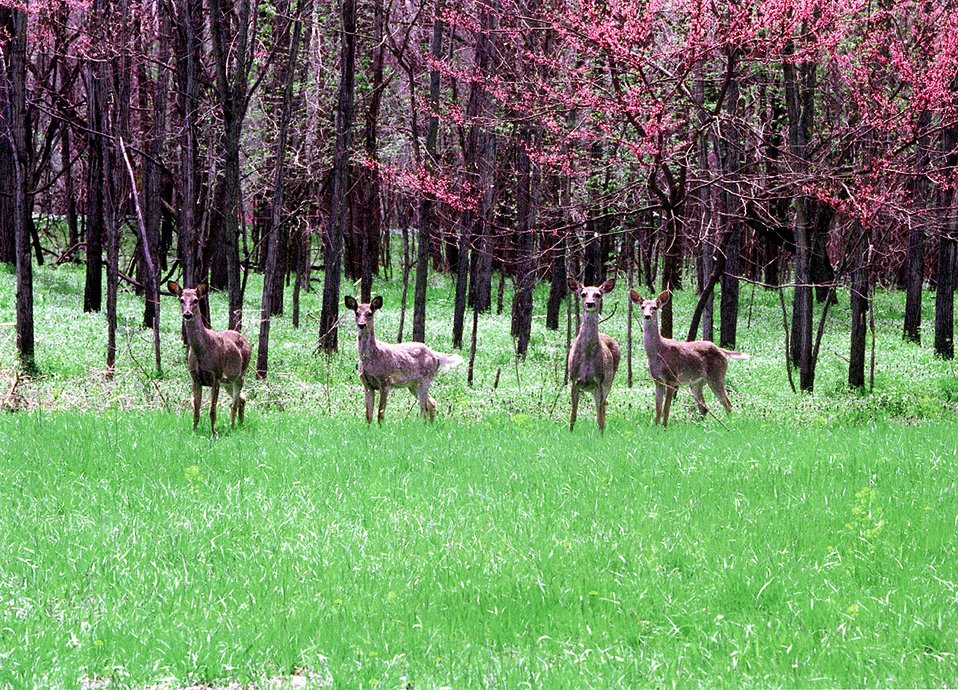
Fernald ecological restoration park.

Spring photo of deer and red bud trees taken near the ecological restoration park located along the western perimeter of the former uranium processing center. The park includes public access and research demonstration areas that provide opportunities for local residents, workers and students to enjoy nature and study native plant and animal species.